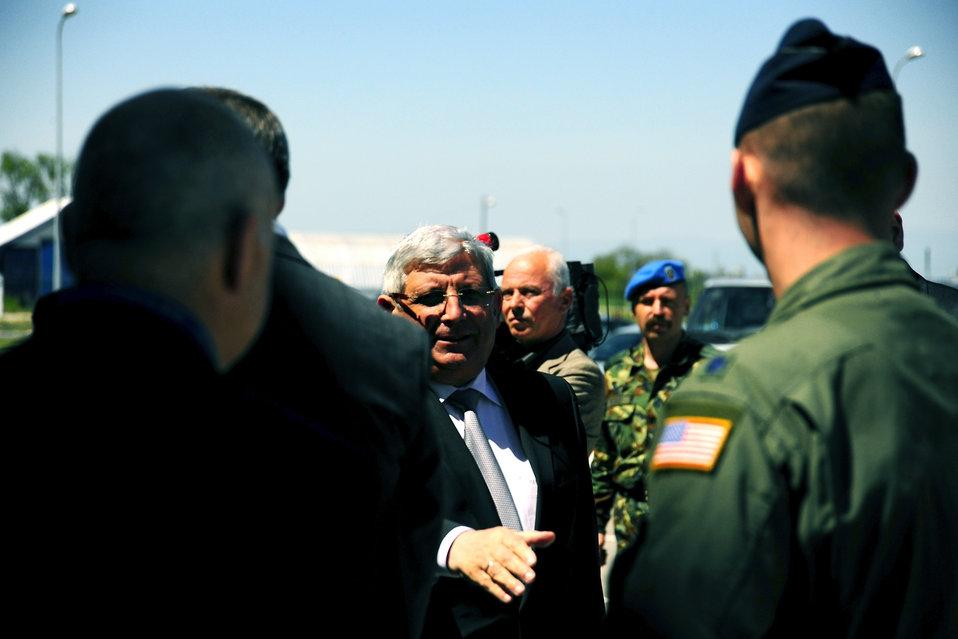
Dignitaries visit U.S., Bulgarian exercise

Bulgarian Minister of Defense Anu Anguelov greets Lt. Col. Matthew Wehner during Operation Thracian Spring 2010's media day April 27, 2010, at Plovdiv Airport in Bulgaria. Colonel Wehner is the 37th Airlift Squadron deployed commander.